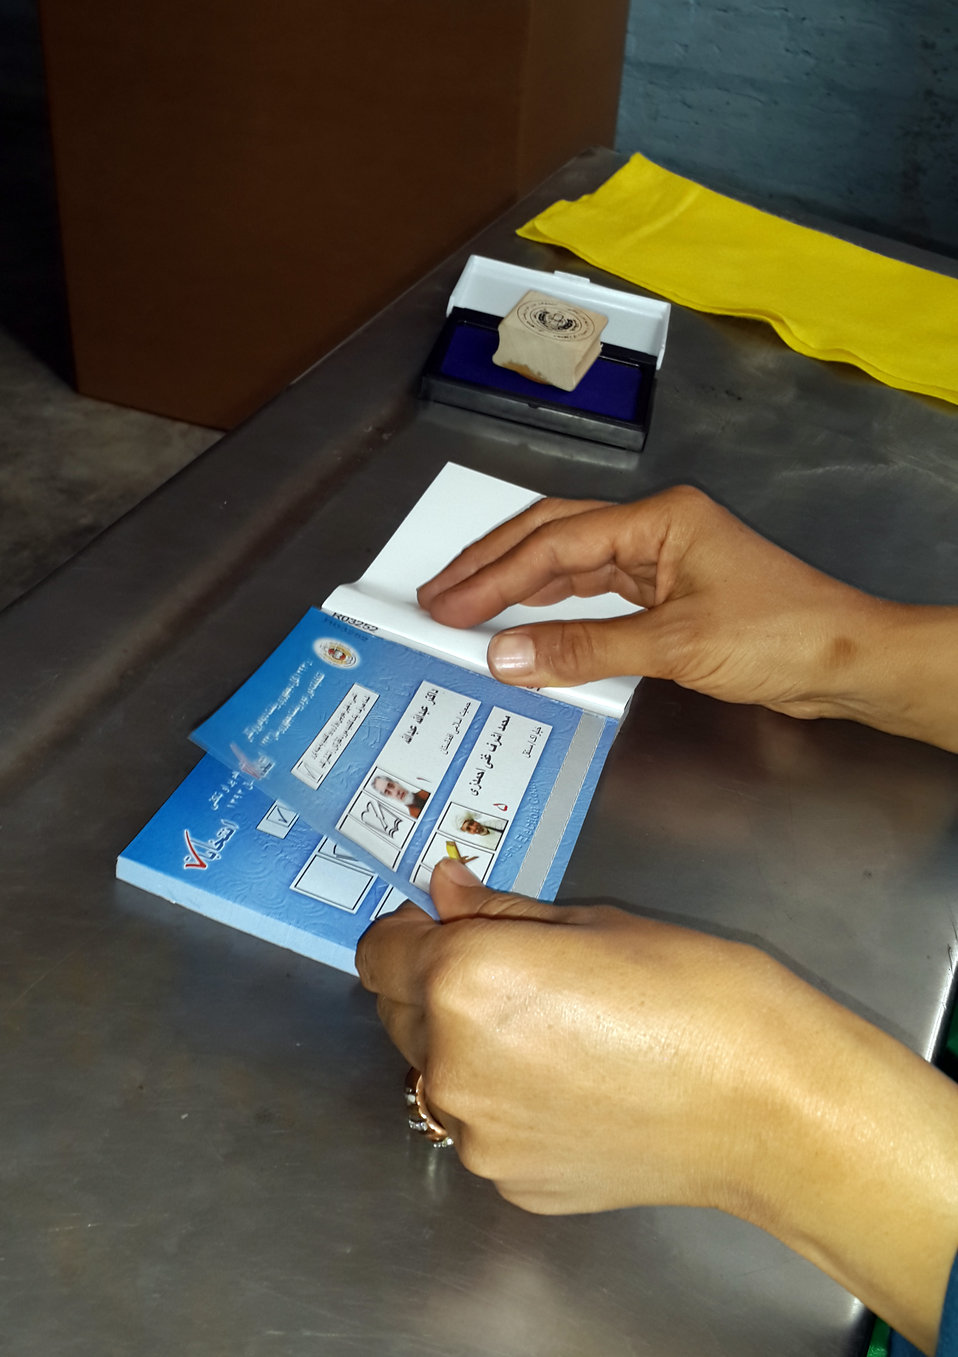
Voting process in Herat.